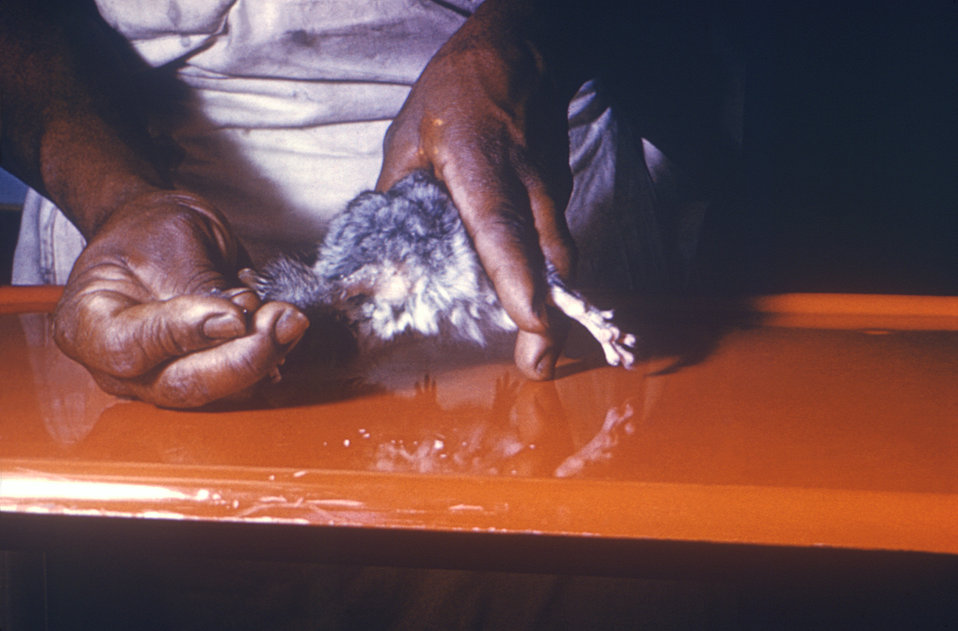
This image shows a technician who was holding an unknown specie of chinchilla, which displayed a cutaneous lesion that was determined to be a case of ringworm due to the dermatophytic fungus, Trichophyton mentagrophytes.